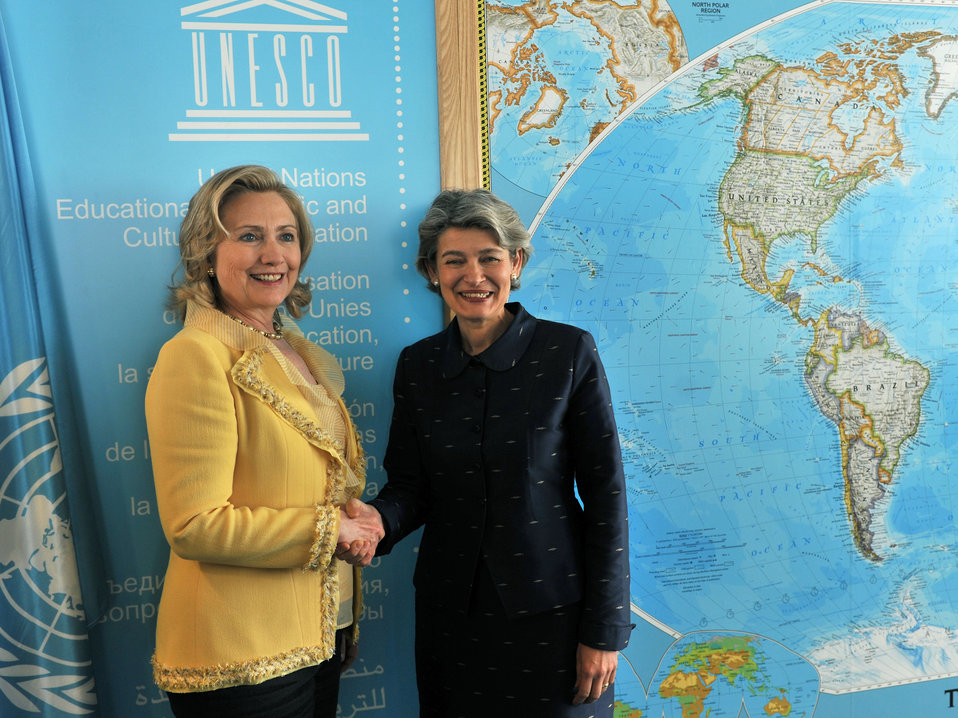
Secretary Clinton and UNESCO Director-General Bokova Shake Hands

U.S. Secretary of State Hillary Rodham Clinton and UNESCO Director-General Irina Bokova shake hands at the launch of UNESCO’s new Global Partnership for Girls’ and Women’s Education, in Paris, France, on May 26, 2011.